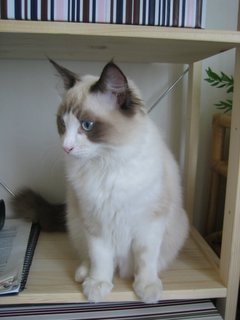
MERLIN Magic Kiwi ´s of Eulalie, CZ ( RAG n 03)